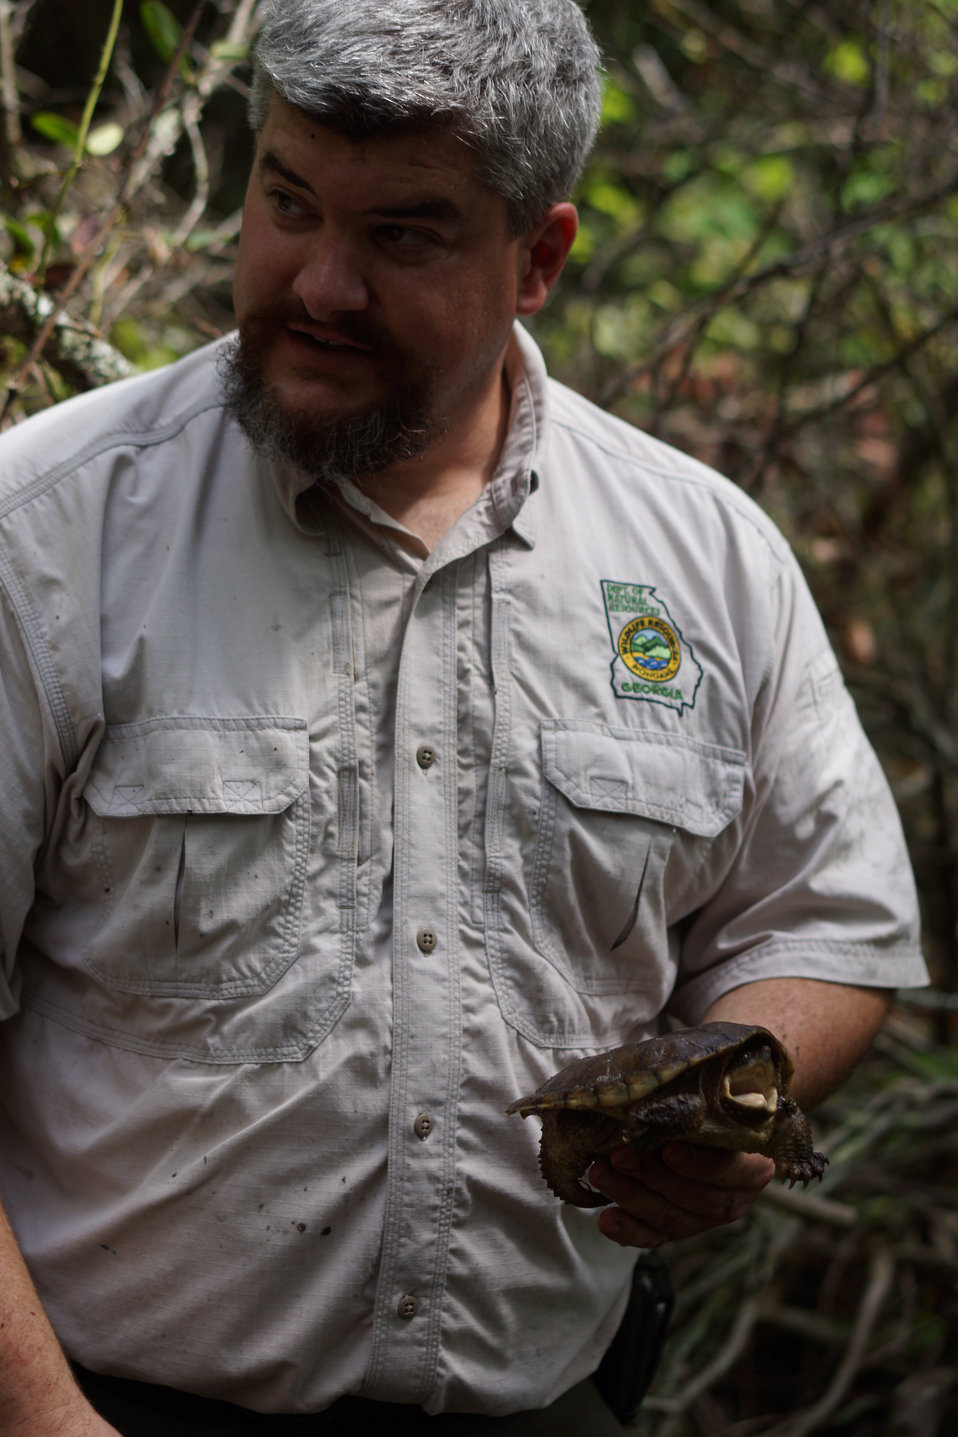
Thomas Floyd with a snapping turtle

In May, bog conservationists from Tennessee, North Carolina, and Georgia convened in the north Georgia mountains for the spring, 2014 meeting of the Bog Learning Network. The event provided an opportunity for biologists to see, first hand, the result of management efforts at two north Georgia bogs. More importantly, the outings provided an opportunity to share innovative approaches to bog management, such as the role of the Georgia Plant Conservation Alliance in conserving rare plants and coordinating a cadre of volunteers to work on bog management.

The Bog Learning Network was convened in the winter of 2013 as a way to bring together people working for bog conservation across the Southern Appalachians. Southern Appalachian bogs are one of North America’s rarest habitats and home to many rare plants and animals.